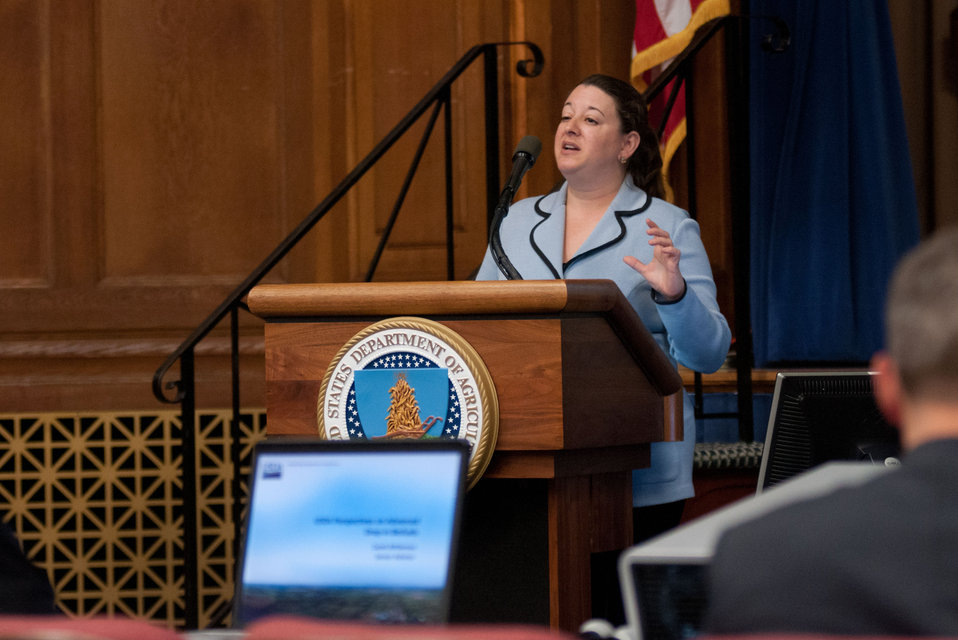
Senior Advisor to the Secretary of Agriculture Sarah Bittleman talked about the Agriculture perspectives on advanced drop-in biofuels, at the Industry Roundtable held in the Jefferson Auditorium, U.S.Department of Agriculture Headquarters in Washington, D.C., on Friday, May 18, 2012. Her talk discussed which feedstocks the USDA sees as coming advanced drop-in biofuels industry, what a transition from a food to a non-food related feedstock looks like and when/if they are required, and a detailed overview of the Commodity Credit Corporation (CCC) programs.